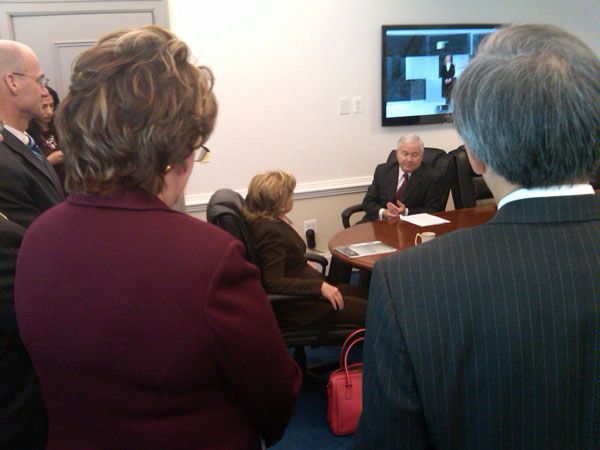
Secretary Clinton with Secretary Gates, Secretary Chu, Under Secretary Tauscher, and Their Aides

U.S. Secretary of State Hillary Rodham Clinton meets with U.S. Secretary of Defense Robert Gates, flanked by U.S. Secretary of Energy Steven Chu, U.S. Under Secretary of State for Arms Control and International Security EllenTauscher, and their aides, April 6, 2010, Washington, D.C.